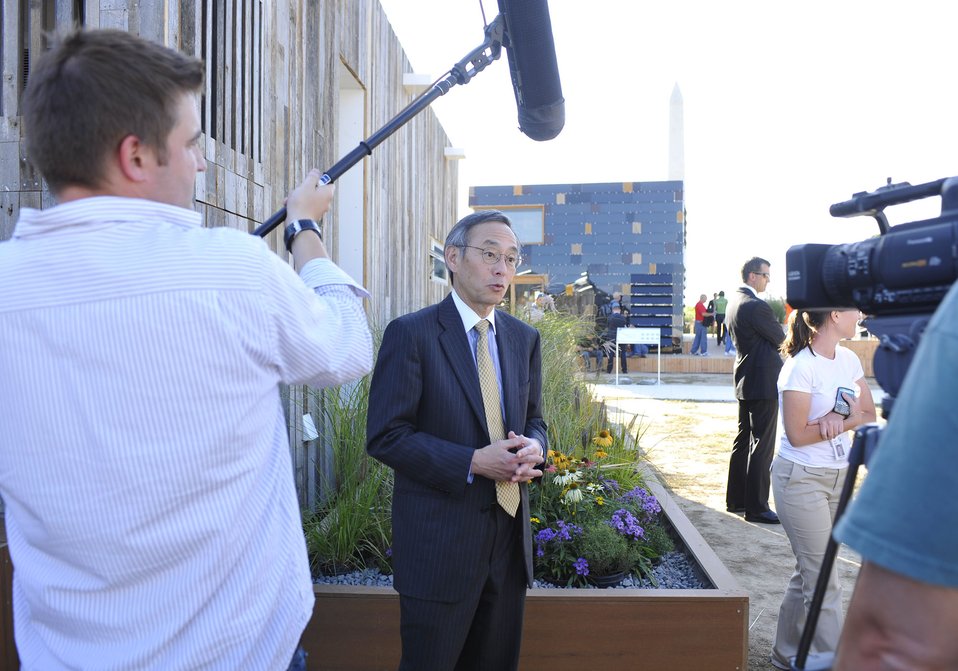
Solar Decathlon 2009 on the National Mall, with Sec. Chu

Solar Decathlon 09